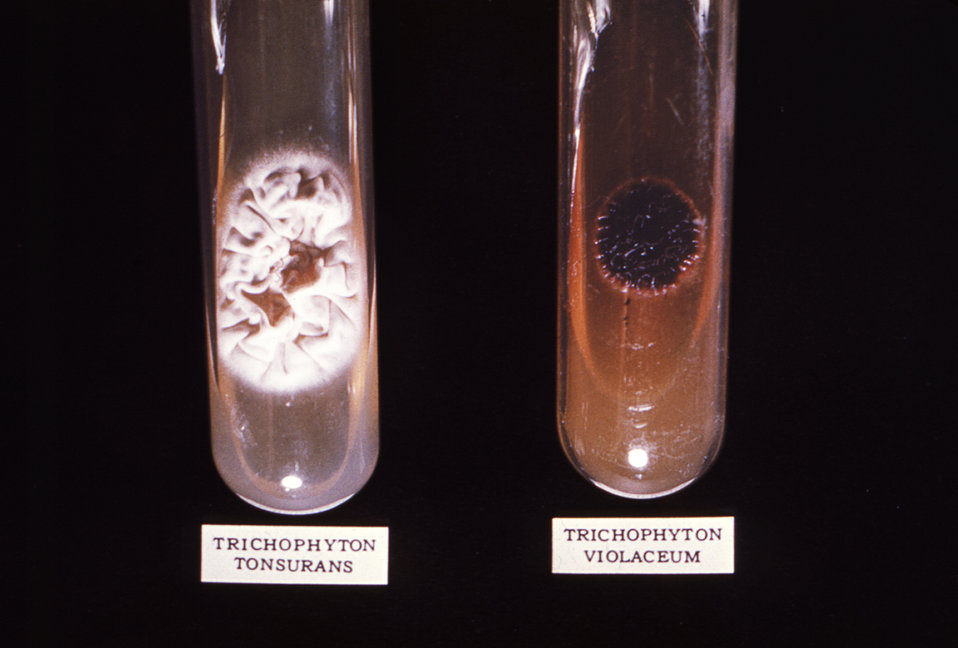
This image depicts two slant culture test tubes containing Sabouraud dextrose agar, which had been inoculated with Trichophyton tonsurans fungal organisms on the left, and T. violaceum on the right.